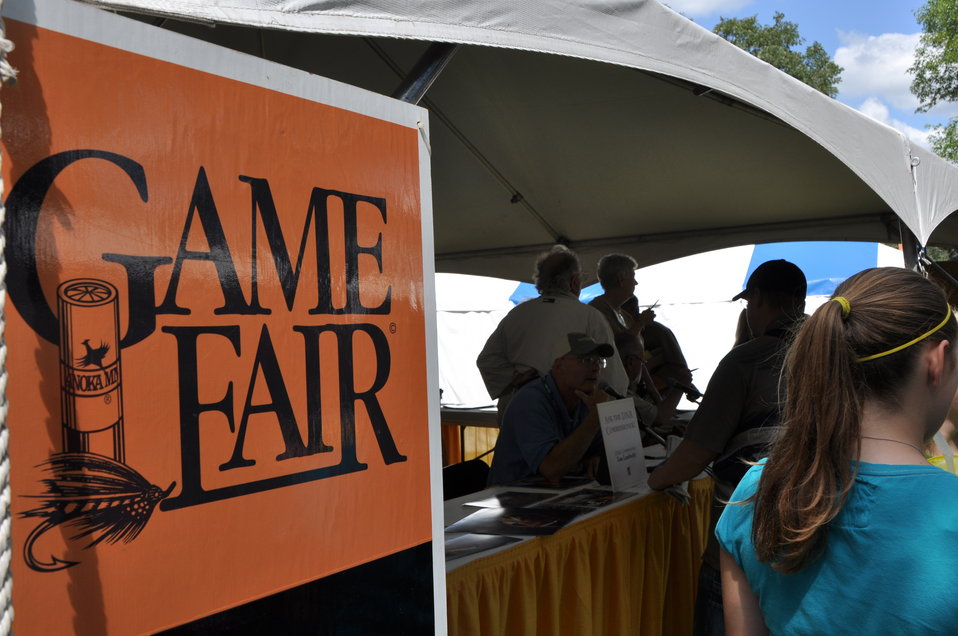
Game Fair entrance.